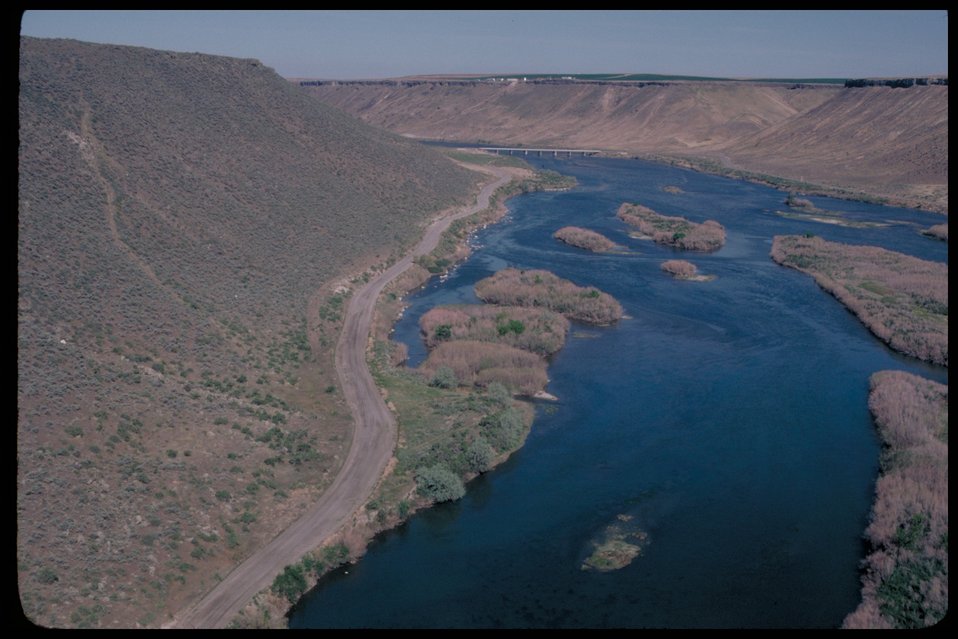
Route at Indian Cove Bridge Oregon Trail Lower Snake River District